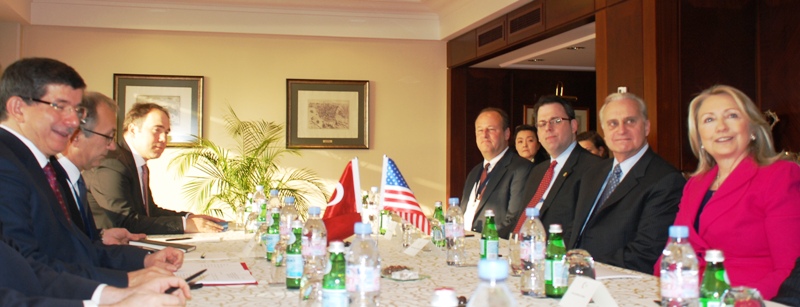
Secretary Clinton Meets With Turkish Foreign Minister Davutoglu

U.S. Secretary of State Hillary Rodham Clinton and Turkish Foreign Minister Ahmet Davutoglu during their bilateral meeting prior to the Second Conference of the Group of Friends of the Syrian People in Istanbul, Turkey, April 1, 2012.